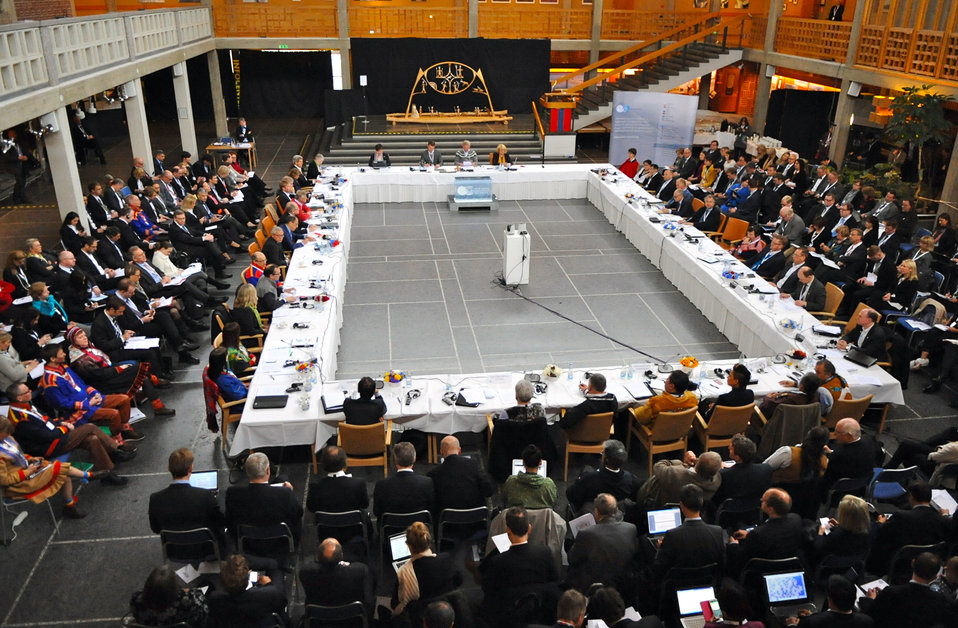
An overview of the Kiruna Ministerial Meeting of the 8th annual Arctic Council meeting at the City Hall in Kiruna, Sweden, on May 15, 2013.